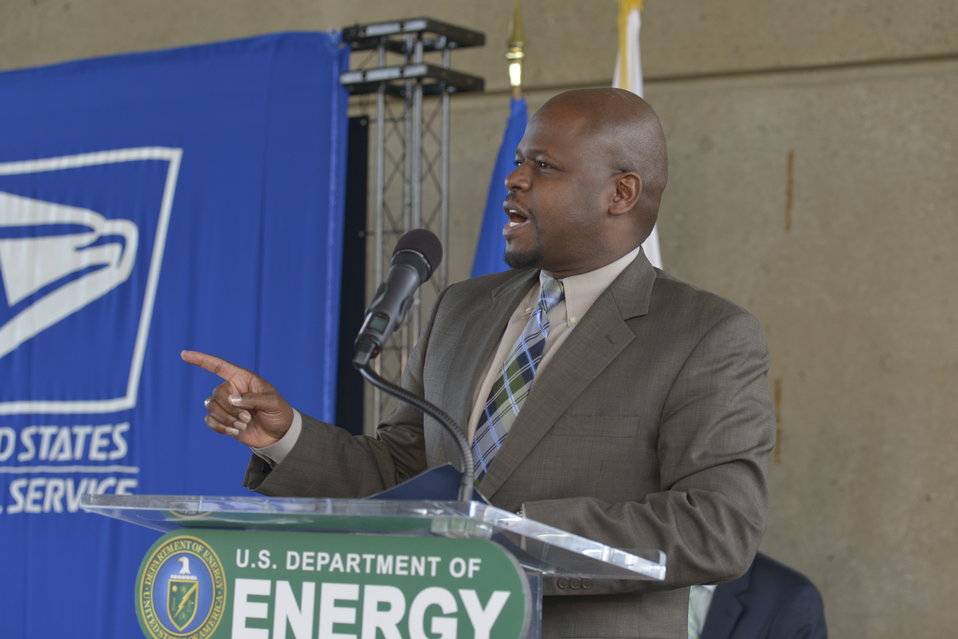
U.S Postal Services introduces a new Global: Sea Surface temperatures forever stamp at the Earth Day program at Department of Energy on April 22, 2014. ( T.Day, C.Williams, C.Anderson II, J.Colin Ph.D, Dr. K. Sullivan, K.Tobin Ph.D, W. Gicher Jr)